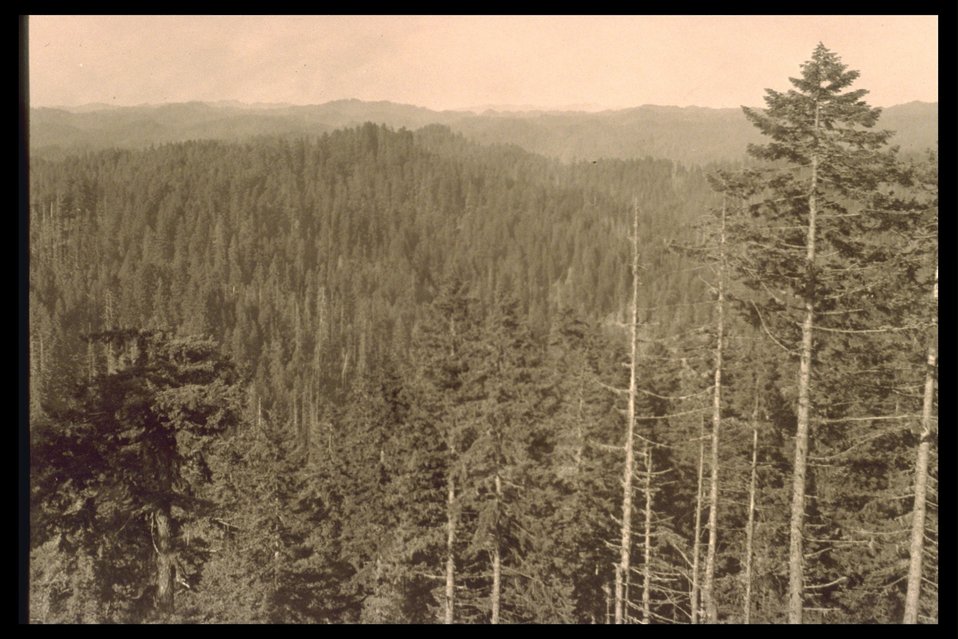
Black & White photo: vista of O & C forest.